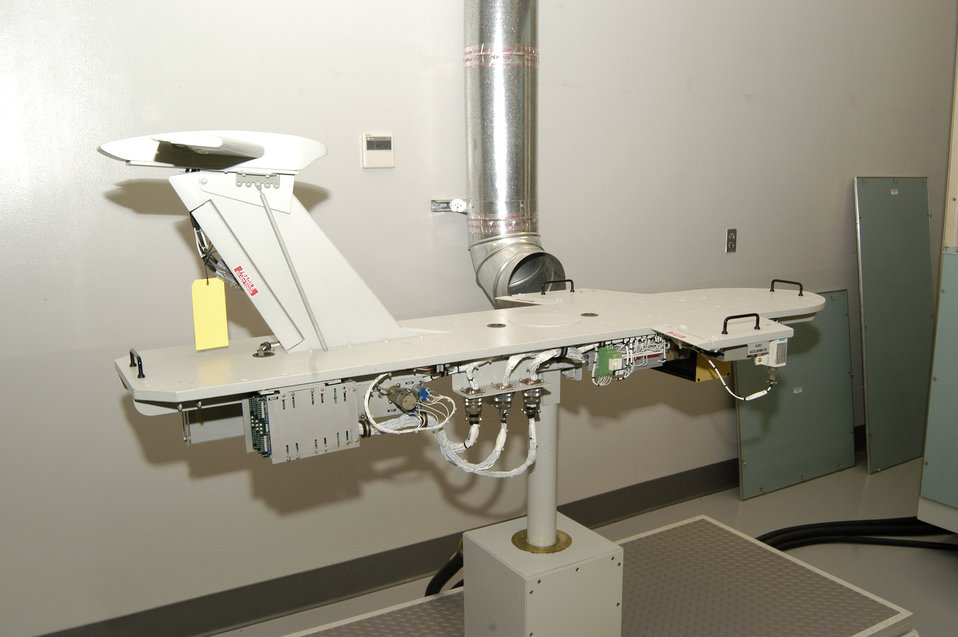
Dover AFB receives new maintenance trainer

A full-scale model of a C-5 Galaxy cockpit, called a combined avionics systems trainer, or CAST, will be used by instructors at Dover Air Force Base, Del., to help train maintainers who will fix avionics systems on the C-5. The trainer comprises five separate sections including a forward cockpit station, navigator station, an aircraft silhouette, an avionics station and an instructor station. The silhouette station, shown here, emulates the movement of C-5 flight control surfaces such as ailerons, elevators and the rudder.